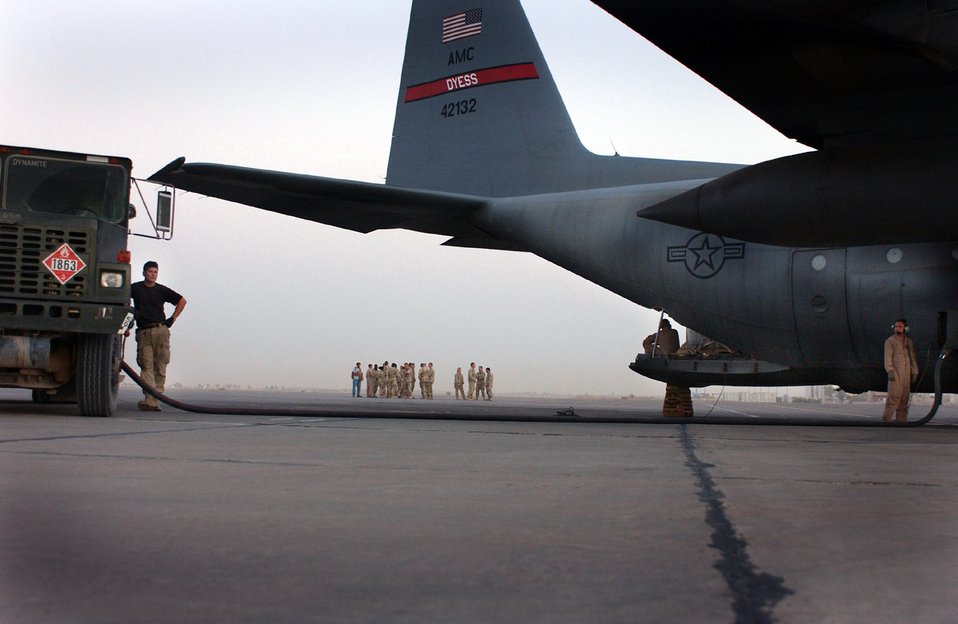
Fuel stop

BAGHDAD, Iraq -- Airman 1st Class Michael Musick (left) and Tech. Sgt. Tom Bosquez monitor the fuel intake to a C-130 Hercules. The aircraft was on the ground less than an hour as it fueled up and swapped out passengers. Airman Musick is a fuels specialist with the 447th Expeditionary Logistics Readiness Squadron here and is deployed from Scott Air Force Base, Ill. Sergeant Bosquez is a flight engineer with the 745th Air Expeditionary Squadron based at a forward-deployed location and is from Dyess AFB, Texas.